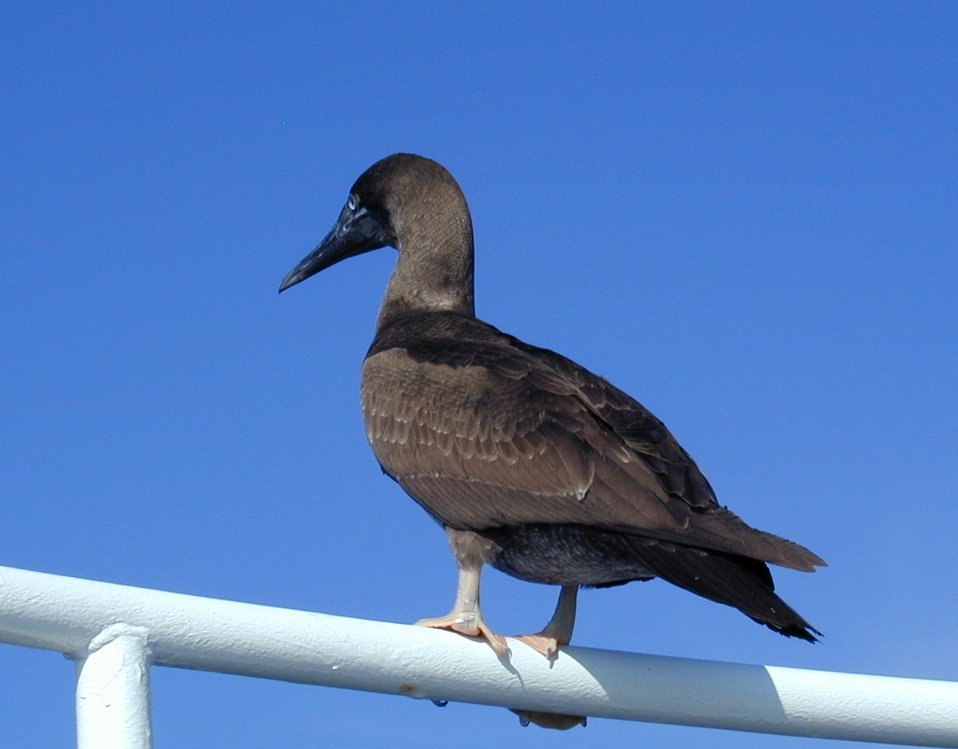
Stern view of a boobie.